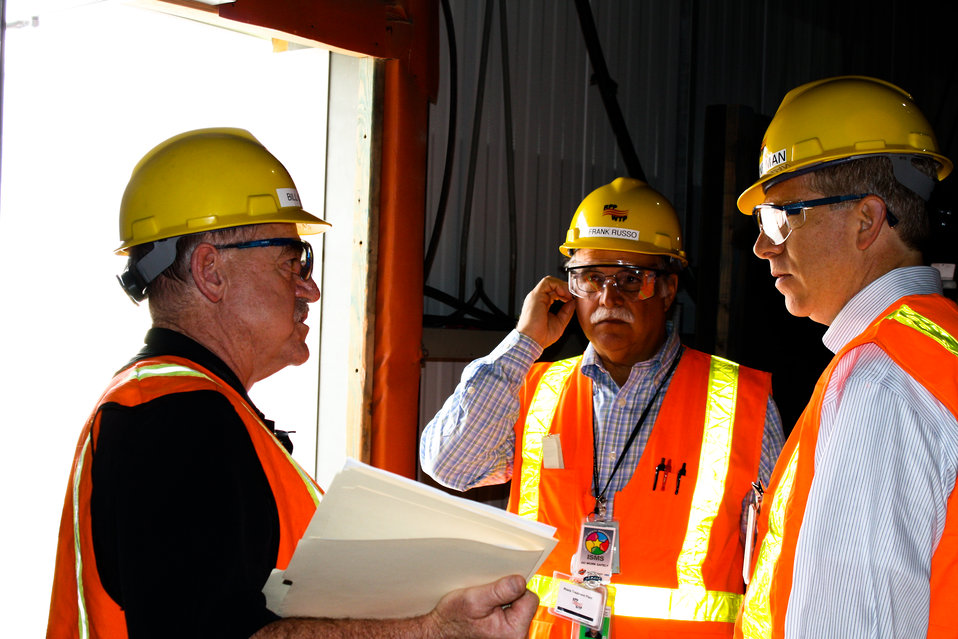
Poneman Vit Plant Visit 06-14-10-19